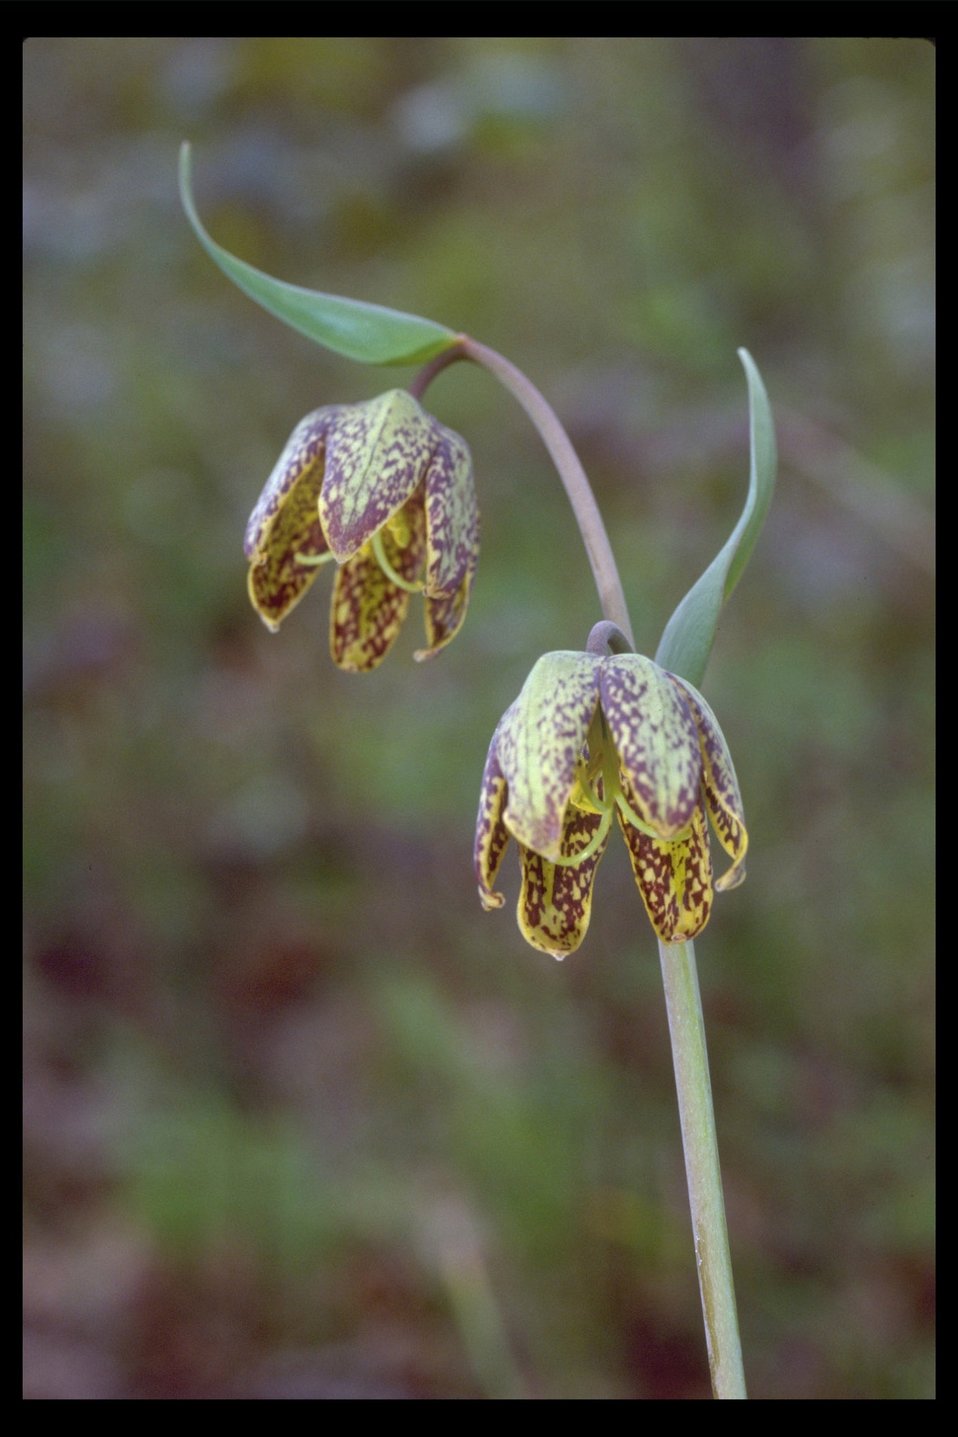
Mission Bells, and sometimes called the Checker Lily (Fritillaria affinis) at Upper Table Rock.